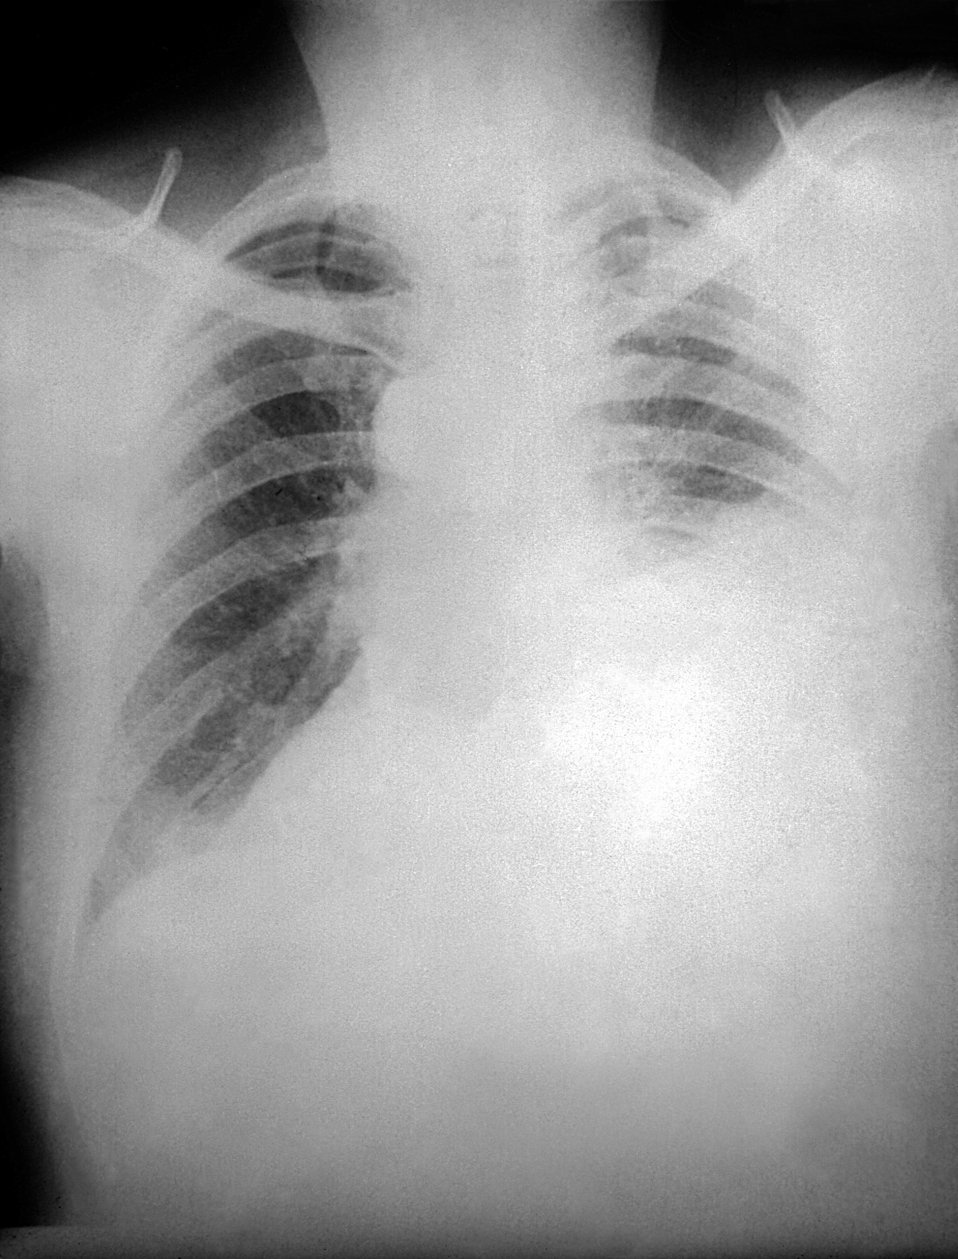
PA chest radiograph of anthrax, 13th day of illness.